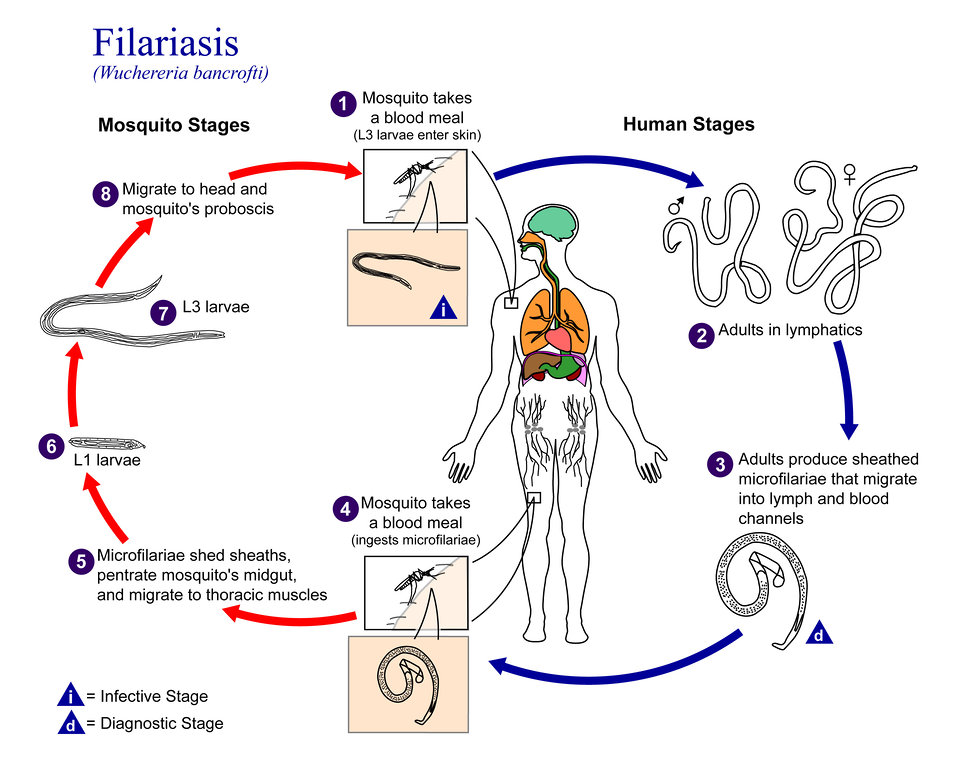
This is an illustration of the life cycle of Wuchereria bancrofti, one the causal agents of Filariasis.